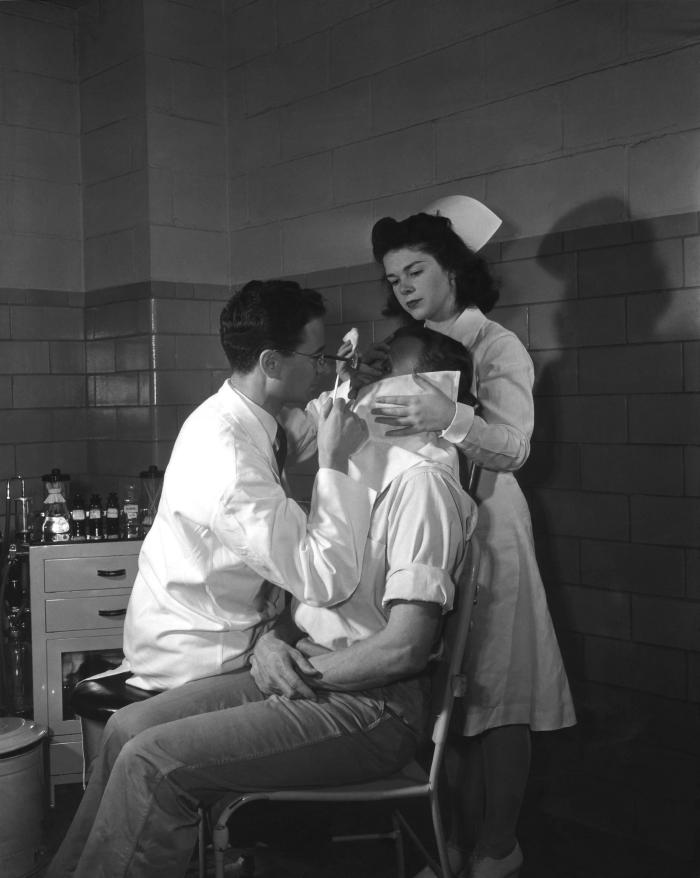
This 1950s historical photograph was provided by the Center for Disease Control's (CDC), National Institute for Occupational Safety and Health (NIOSH). It depicted an industrial plant physician and nurse, as they were examining the eye of an industrial plant worker.